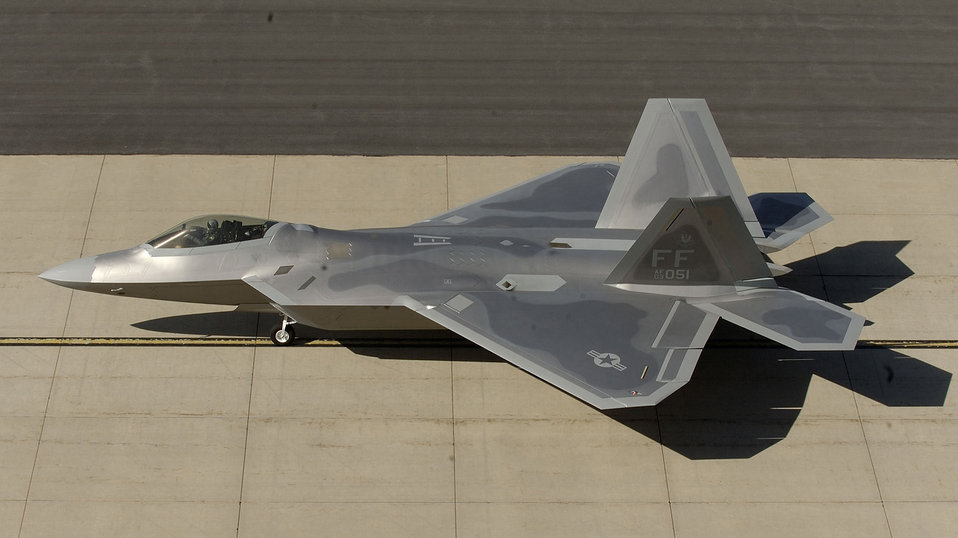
Combat Hammer

HILL AIR FORCE BASE, Utah -- An F/A-22 Raptor taxis after landing here. The jet, from the 27th Fighter Squadron at Langley Air Force Base, Va., deployed here Oct. 15 for the next-generation fighter's first deployment for live weapons bomb training exercise.